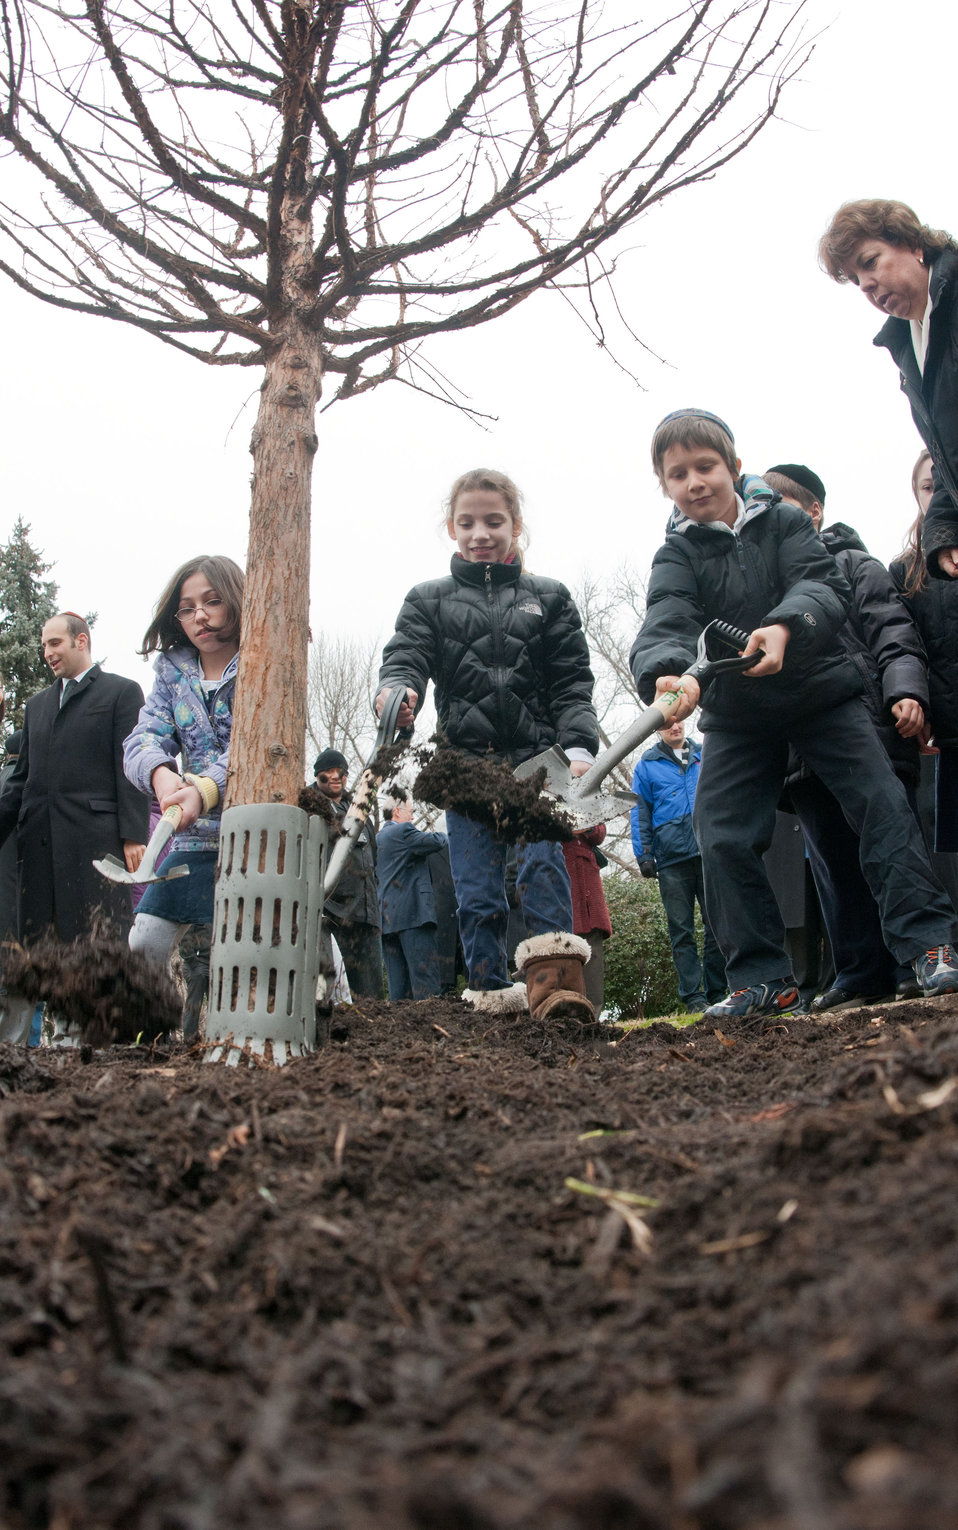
The third grade class of the Jewish Primary Day School of the Nation’s Capital participate in the mulching of the Dawn Redwood used in the Celebration of Tu B’Shevat “The New Year of the Trees” event on the District of Columbia western lawn next to the USDA Headquarters, Whitten Building at 14th Street and Independence Ave SW, in Washington, D.C. on Wednesday, February 8, 2012. For the event they sang “Almond Trees Blossom” and “Tree of Life.”